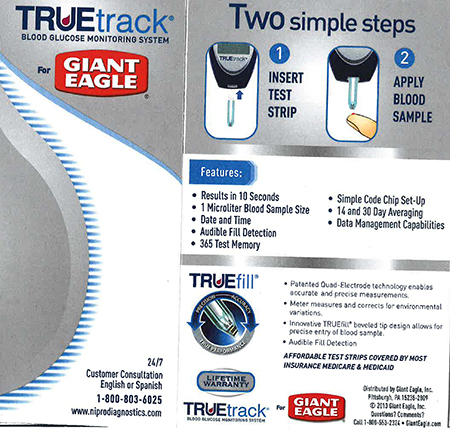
RECALLED – Blood Glucose Meters

January 2, 2014 – Product Recall – Nipro Diagnostics, Inc. Initiates Voluntary Recall of Certain TRUEbalance and TRUEtrack Blood Glucose Meters.